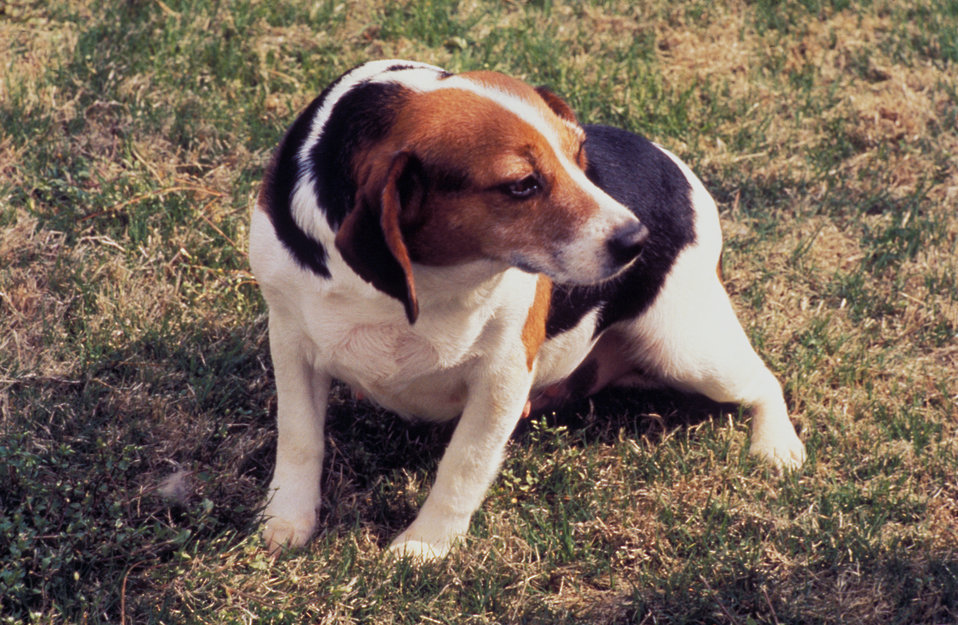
Domesticated dogs can become possible vectors of the rabies virus to humans.